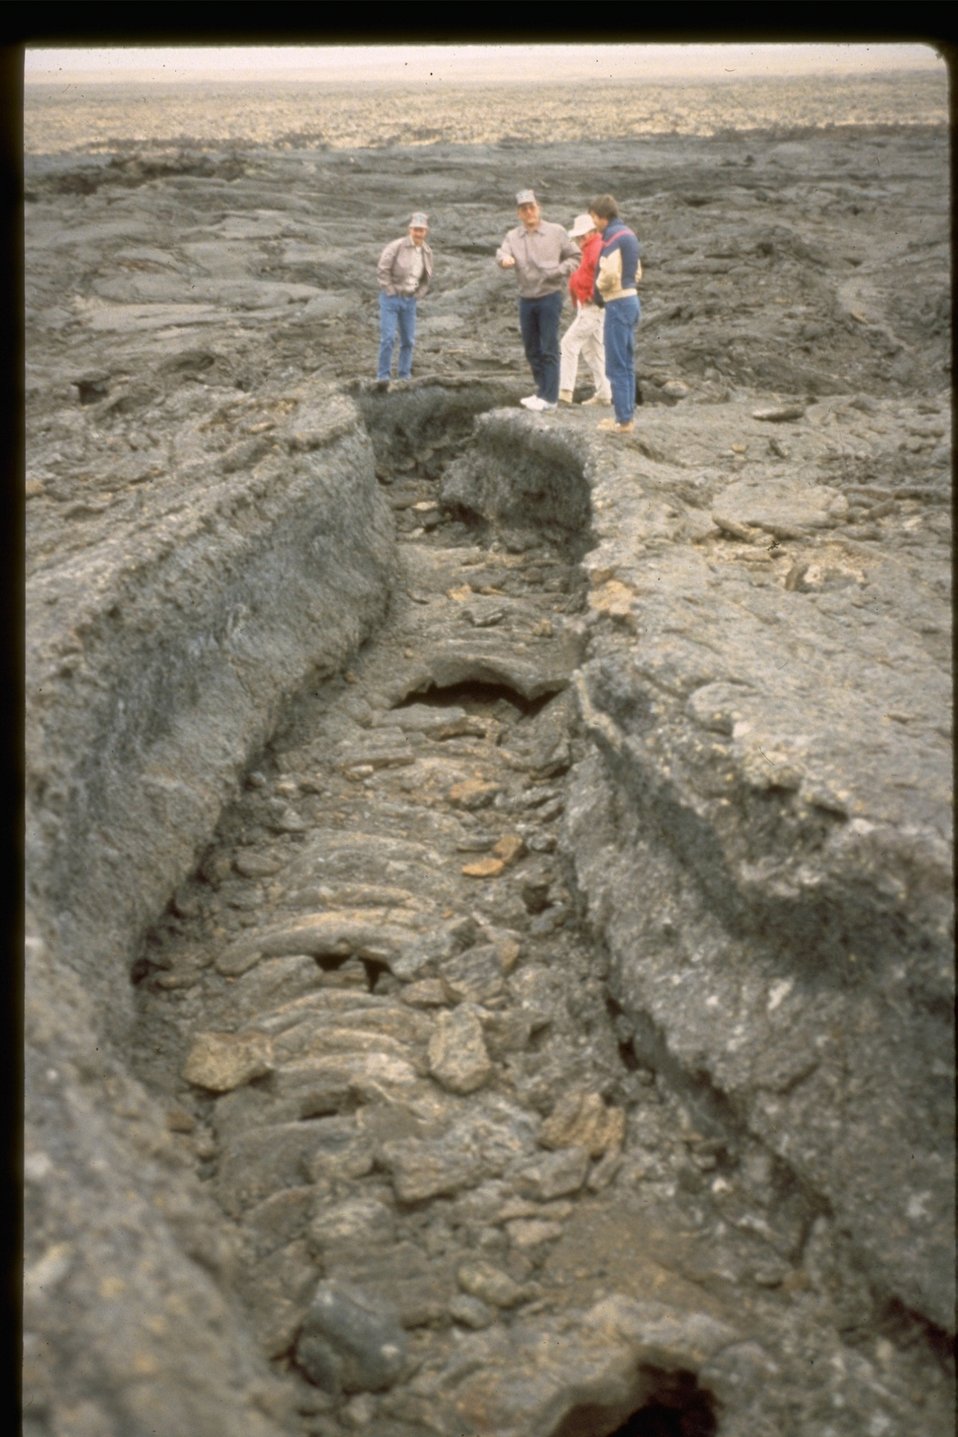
Lava Stream at Jordan Craters Wilderness Study Area. OR 3-128.